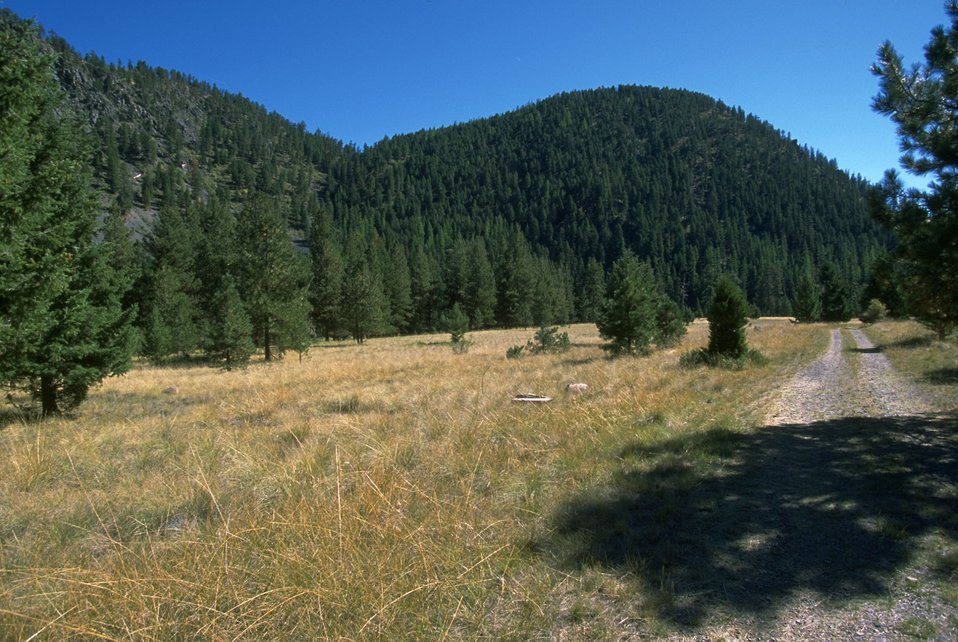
Blackfoot River ""road to the bufffalo"" non-motorized trail that follows the river